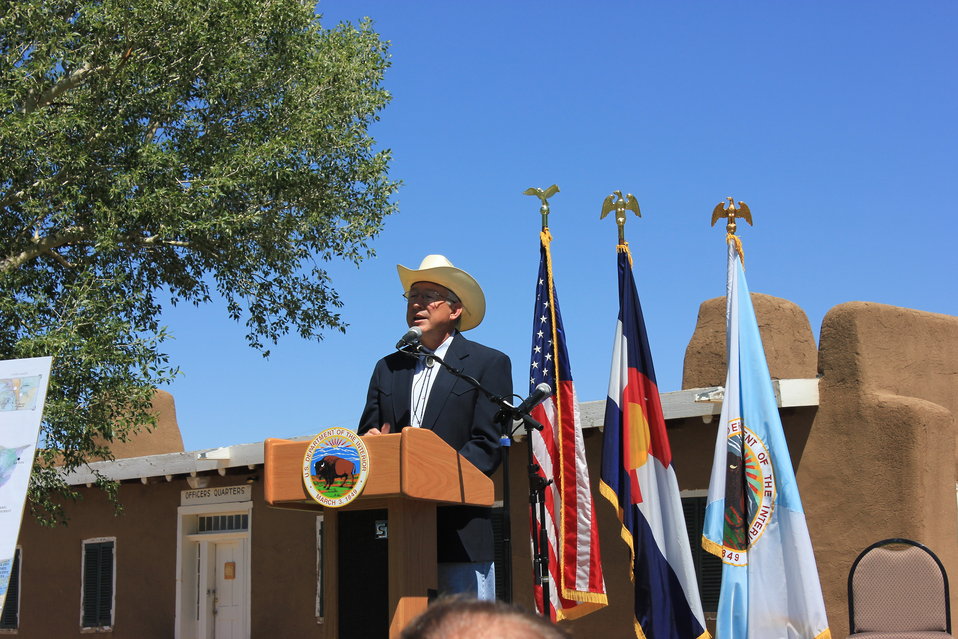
Historic Conservation Easement in Sangre de Cristo Mountains